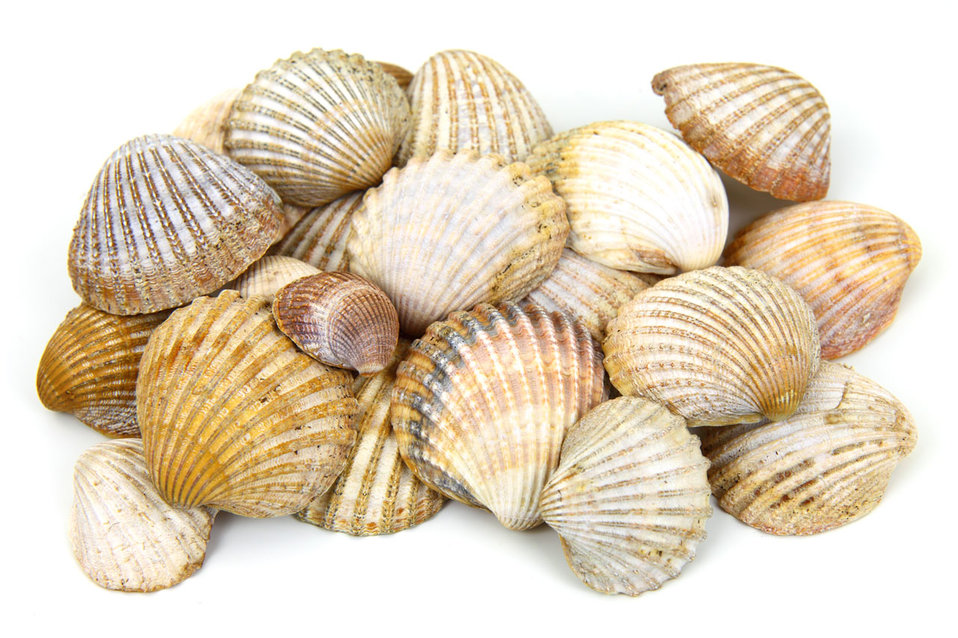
Sea shells isolated on white background.